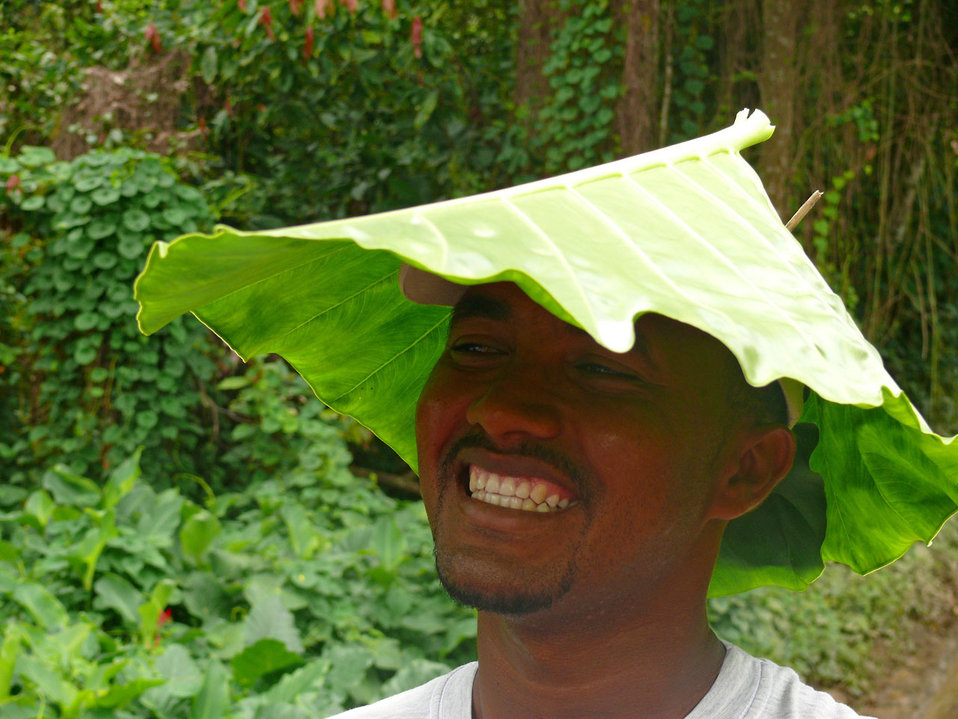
Candy man

Man with hat on.